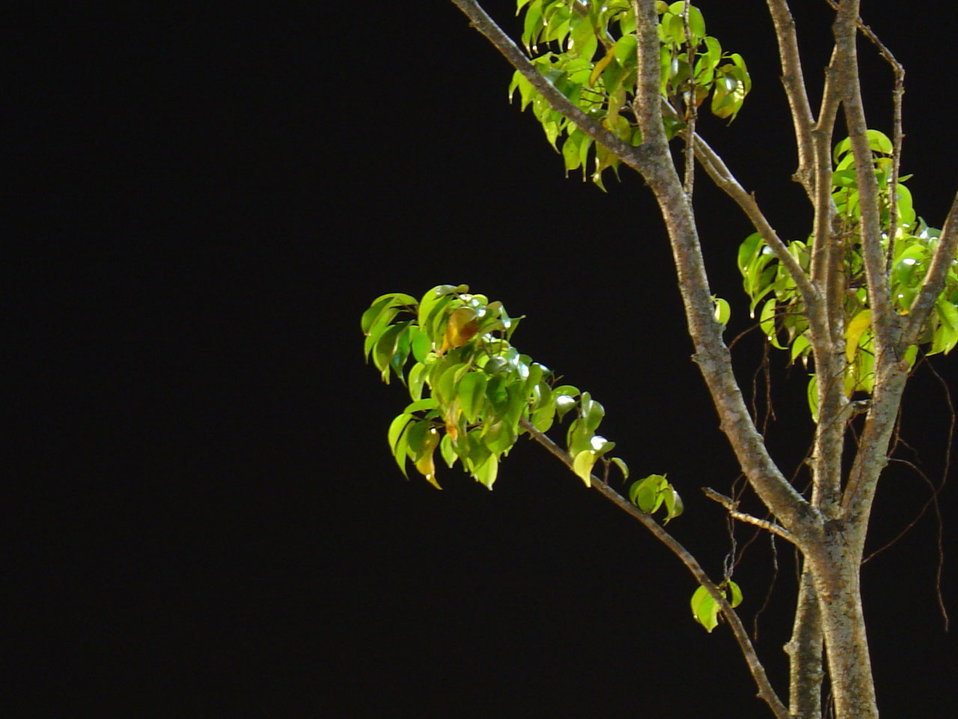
Arvore noturna.